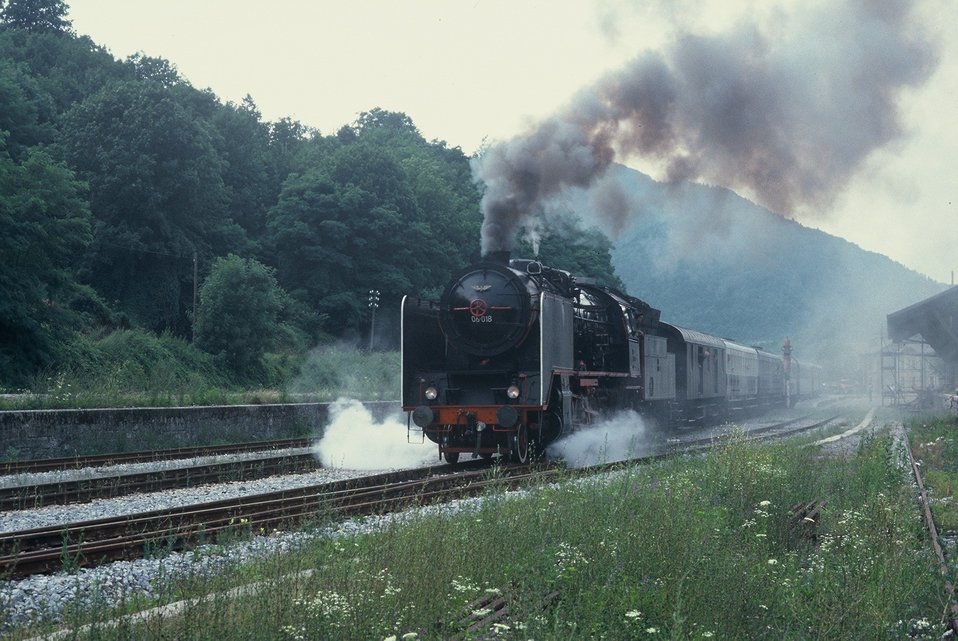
Slovenščina: JŽ 06 na postaji Most na Soči